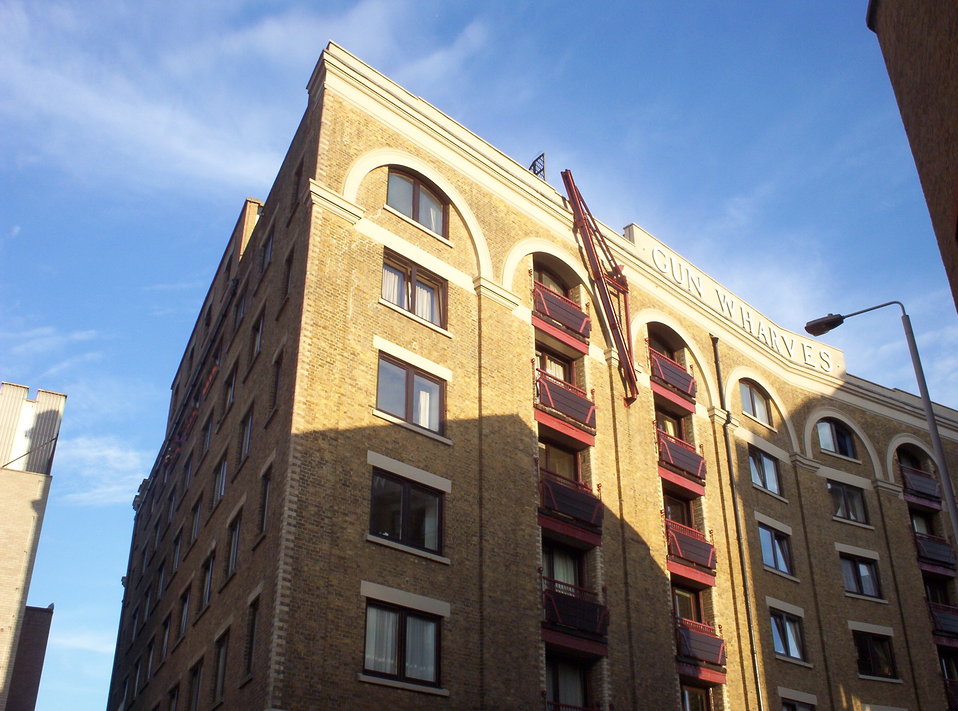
Gun Wharves, Wapping. Now home to luxury flats.